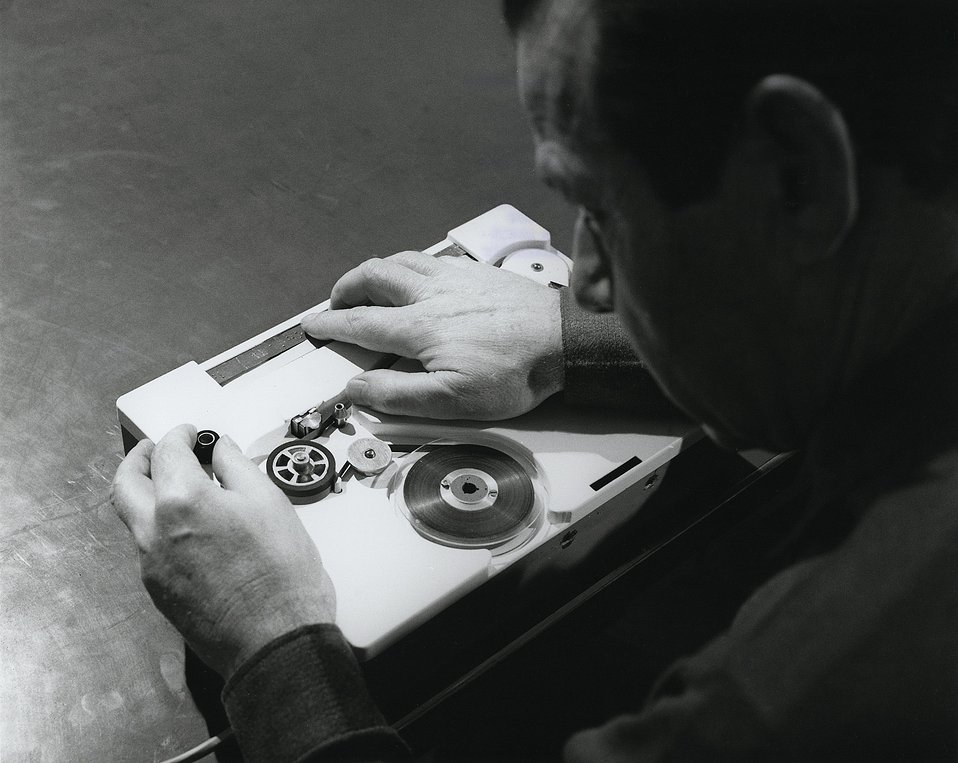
Prototype model of new instrument that will reproduce symbols in the braille alphabet that have been recorded on ordinary magnetic tape.
c.1969